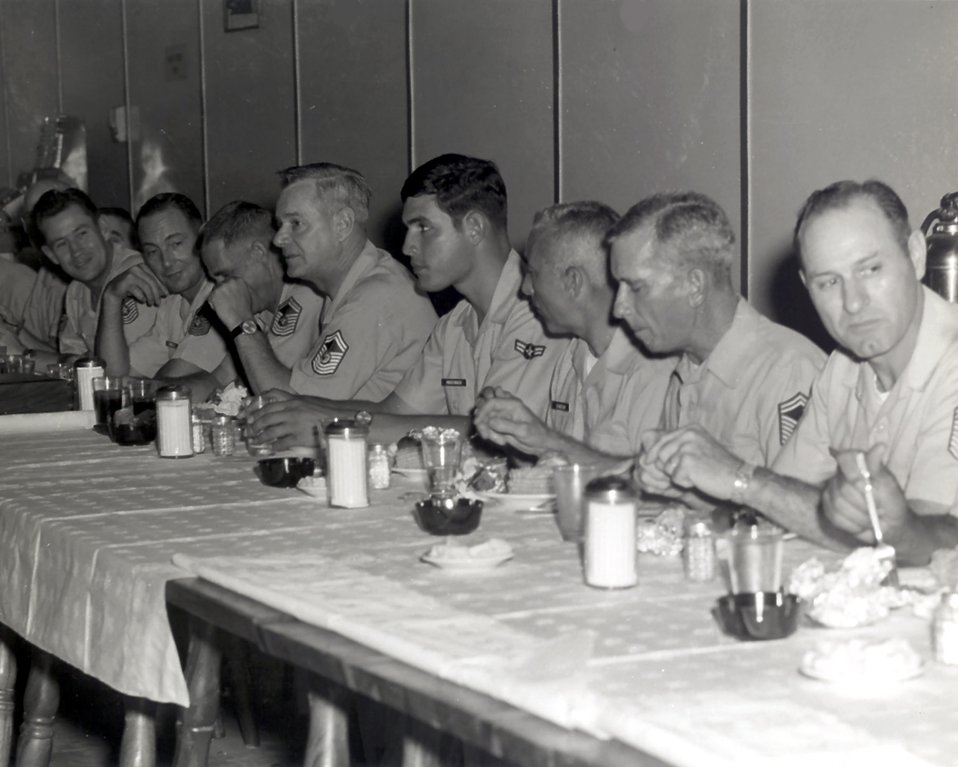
Top enlisted visits Vietnam

The Air Force's first Chief Master Sgt. of the Air Force, Paul Airey, [fifth from right] chats with Airmen Nov. 2, 1968 at the Noncommissioned Officers Club at Tuy Hoa Air Base, South Vietnam. The 31st Tactical Fighter Wing was the host unit at Tuy Hoa.